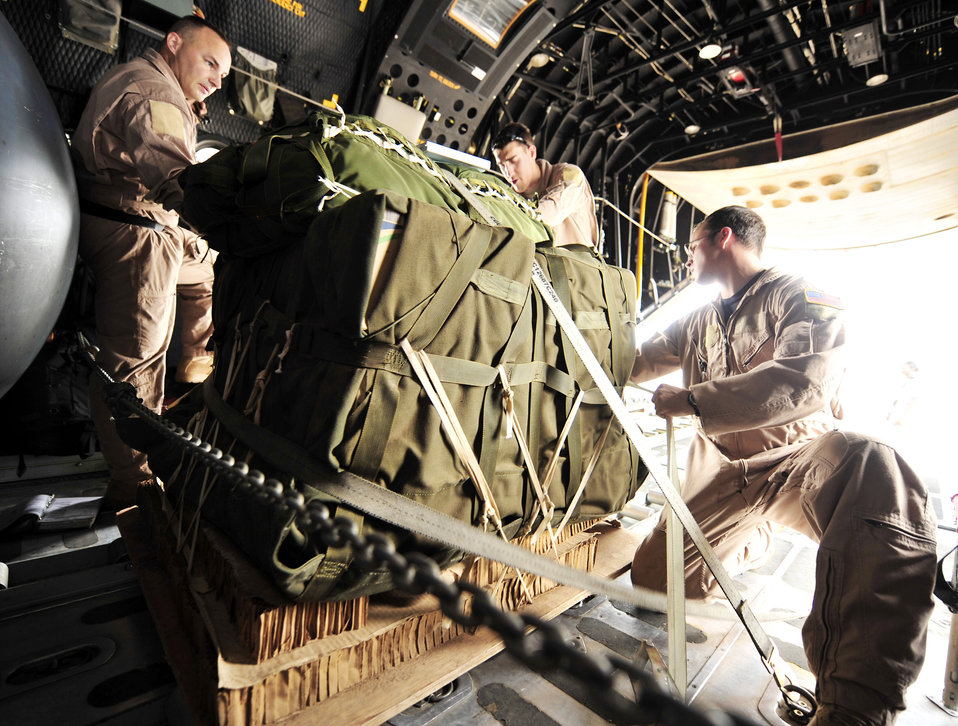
Move a little to the right

Senior Airman Jacob Dattage (left), Tech Sgt. Darryl Woodruff and Staff Sgt. Martin Smith position equipment on board a C-130 Hercules at Camp Lemonnier, Djibouti. The Airmen are with the 81st Expeditionary Rescue Squadron and are training Ethiopian air force officers in air drop procedures.